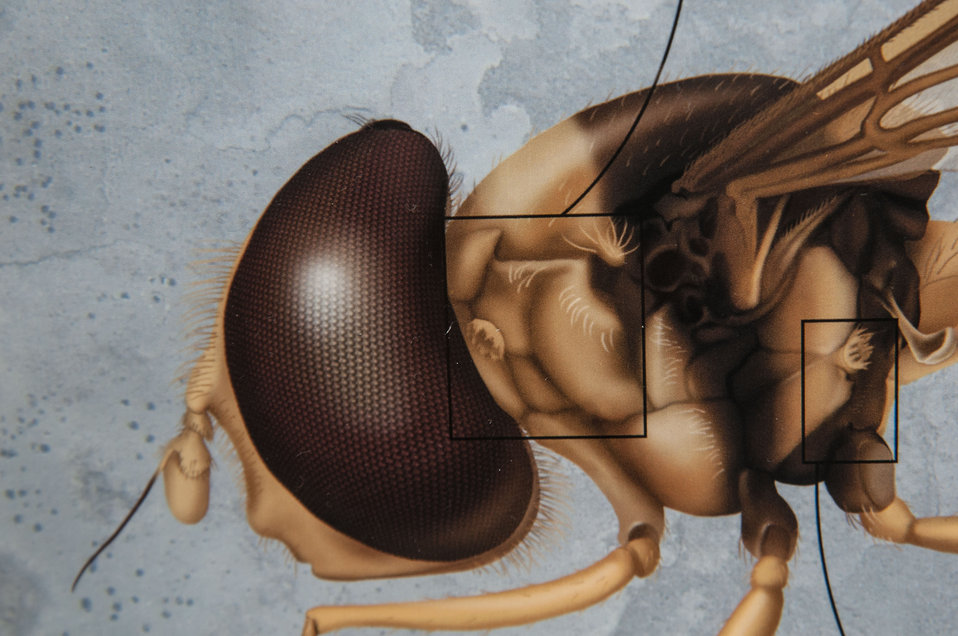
Online Viewer's Choice entries of the 2013 Art & Agriculture, Tuesday, July 9, 2013, in the South Building, Washington, D.C. Themes were expressed by employees from across the department and the contest was open to full-time and part-time USDA employees. Winning artwork will be displayed till the end of the year. U.S. Artistic expression is a creative outlet that is vital for an individual to grow and develop.